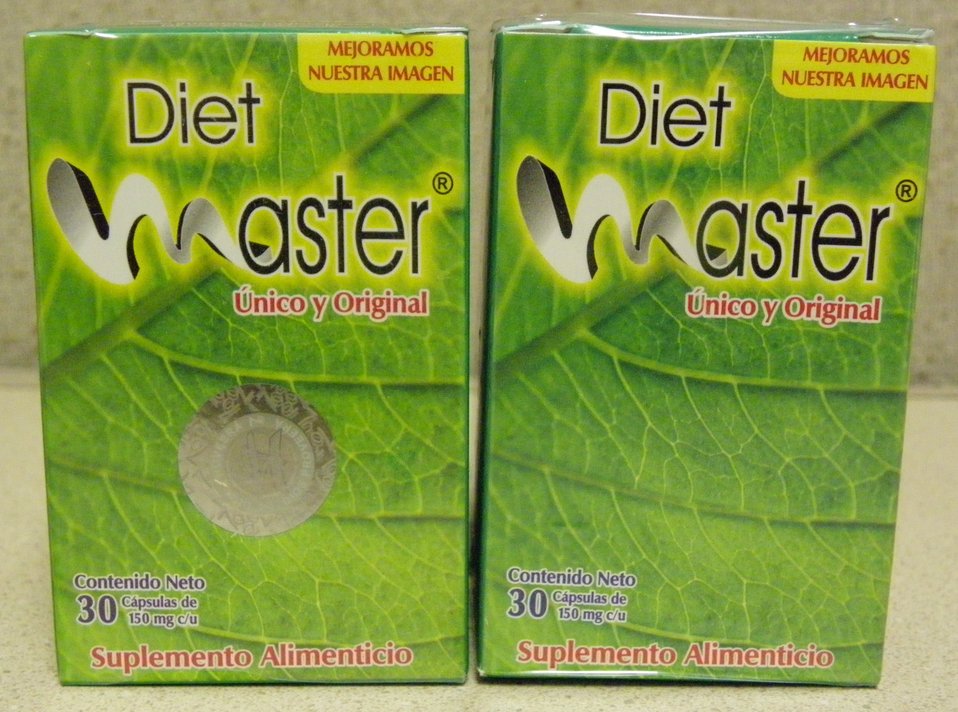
Diet Master

November 21, 2013 - The FDA is advising consumers not to purchase or use 'Diet Master,' a product promoted and sold for weight loss. The product was found to contain undeclared sibutramine and phenolphthalein For more information, go to www.fda.gov/Drugs/ResourcesForYou/Consumers/BuyingUsingMe....

And read this Consumer Update: Beware of Fraudulent ‘Dietary Supplements’